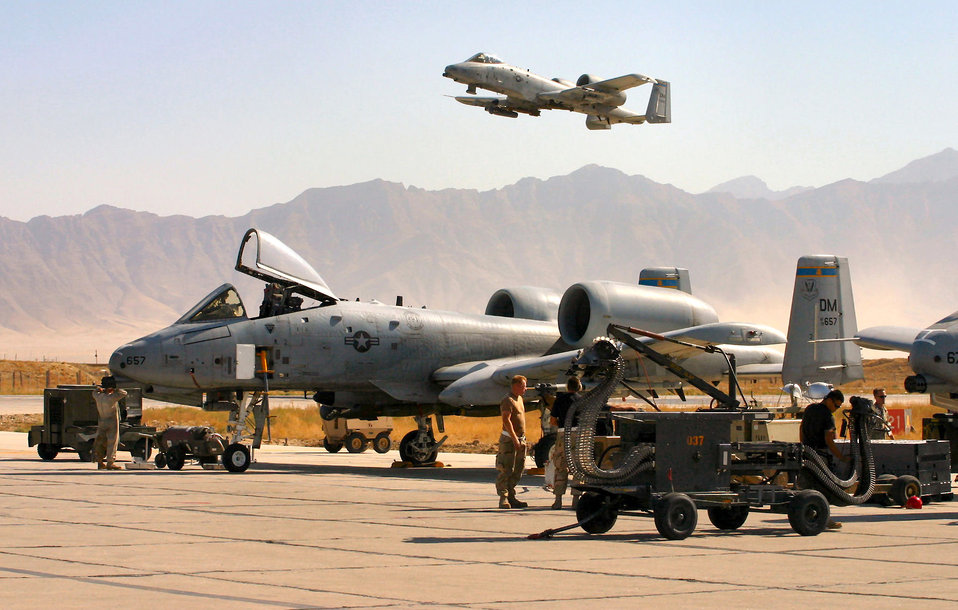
Thunderbolts on patrol

BAGRAM AIR BASE, Afghanistan (AFPN) -- An A-10 Thunderbolt II takes off on a combat mission as A-10 crew chiefs, weapons loaders and an avionics specialist ready others for another mission. Since Sept. 15, A-10s here have flown more than 1,700 combat sorties, totaling more than 6,000 combat hours in support of Operation Enduring Freedom. The A-10 was the first Air Force aircraft specially designed for close air support of ground forces.